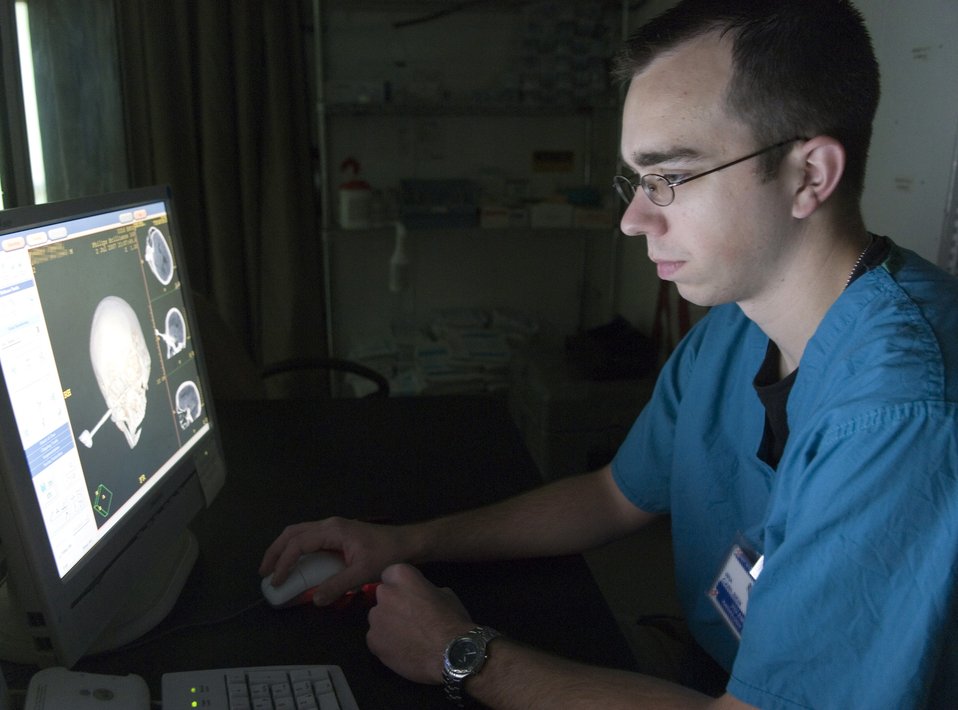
Balad radiologists scan to save lives

Senior Airman Dustun Carlsen references a past CT scan of a patient with a knife lodged in his head at the Air Force Theater Hospital at Balad Air Base, Iraq. Airman Carlsen is a radiology technician with the 332nd Expeditionary Medical Group, and is deployed from Lackland Air Force Base, Texas.